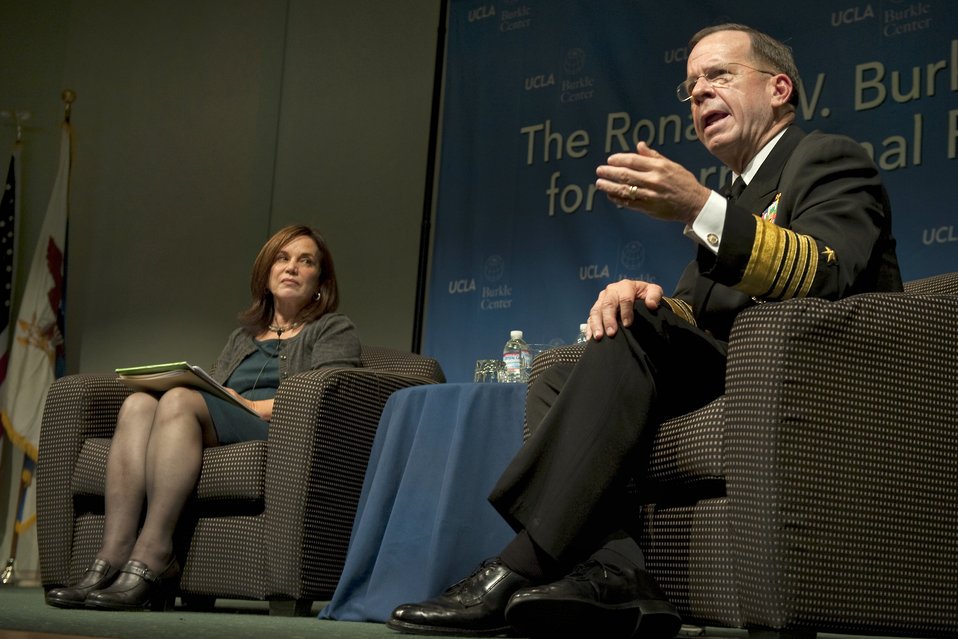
Admiral Mullen works to bridge military-civilian gap

Navy Adm. Mike Mullen, chairman of the Joint Chiefs of Staff, answers a question during the Bernard Brodie Distinguished Lecture Series at UCLA, Nov. 10, 2010, as Renee Montagne, co-host of National Public Radio’s Morning Edition, listens.